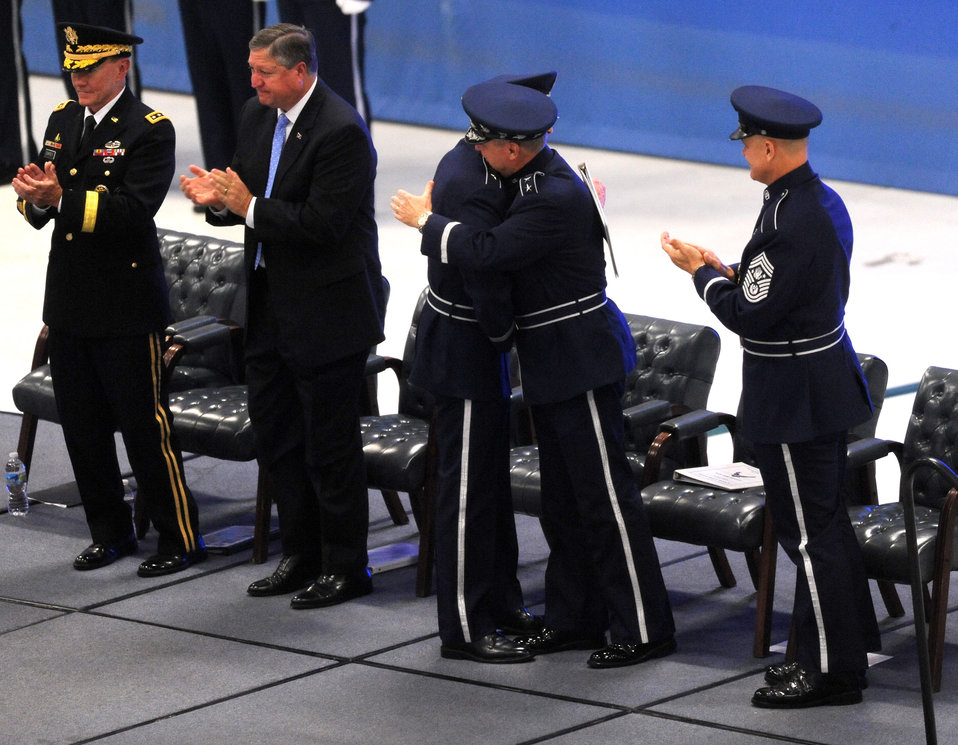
Welsh ‘humbled’ to serve as Air Force chief of staff

Air Force Chief of Staff Gen. Norton Schwartz embraces Gen. Mark A. Welsh III during the chief of staff transition ceremony at Joint Base Andrews, Md., Aug. 10, 2012. Schwartz served in the Air Force for 39 years, the last four years as the Air Force’s senior uniformed leader. Prior to becoming the Air Force chief of staff, Welsh commanded U.S. Air Forces in Europe.